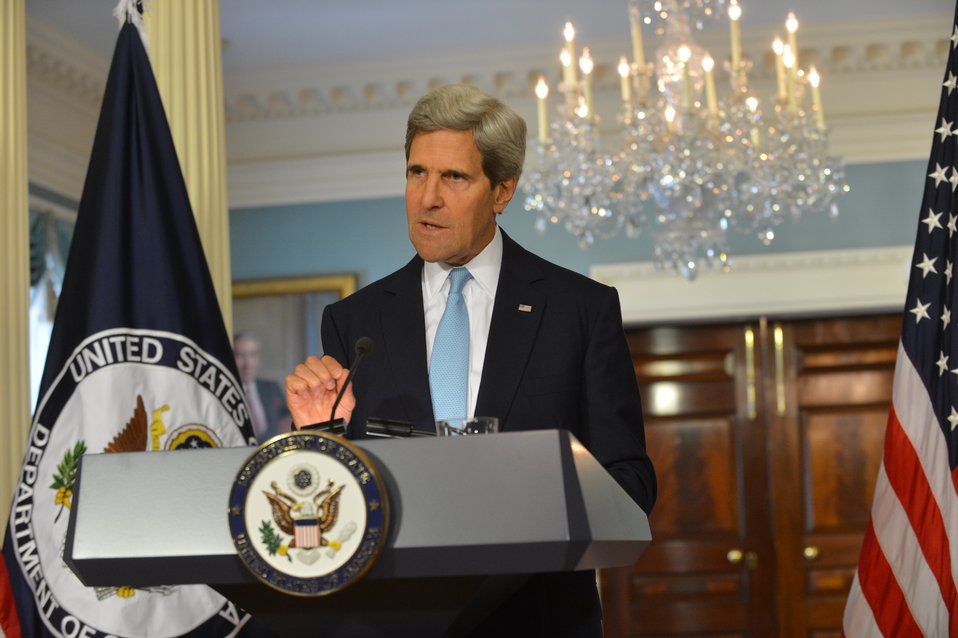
Secretary Kerry Delivers Remarks on Syria

U.S. Secretary of State John Kerry delivers remarks on Syria at the U.S. Department of State in Washington, DC, on August 30, 2013.